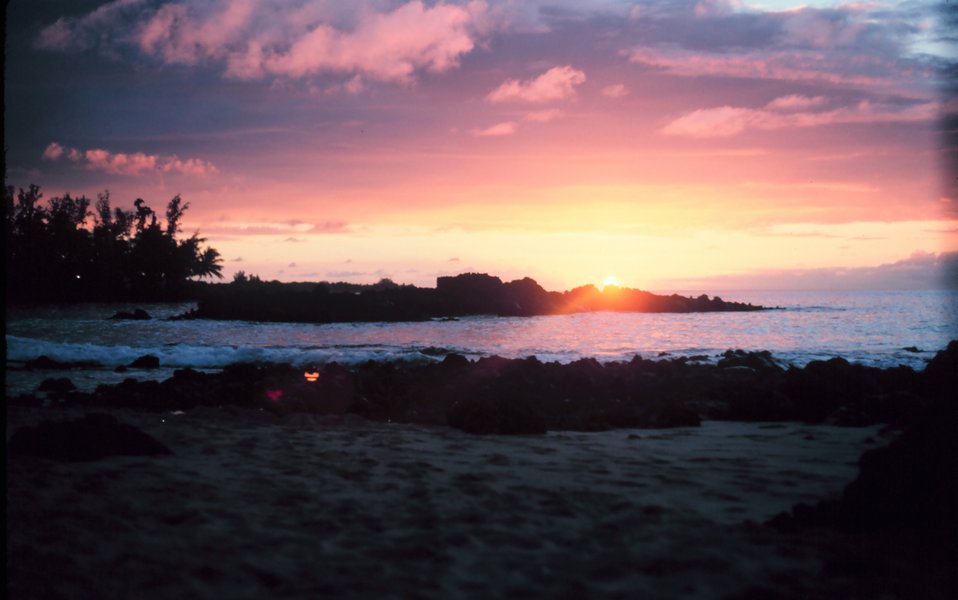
A Kona Coast sunset